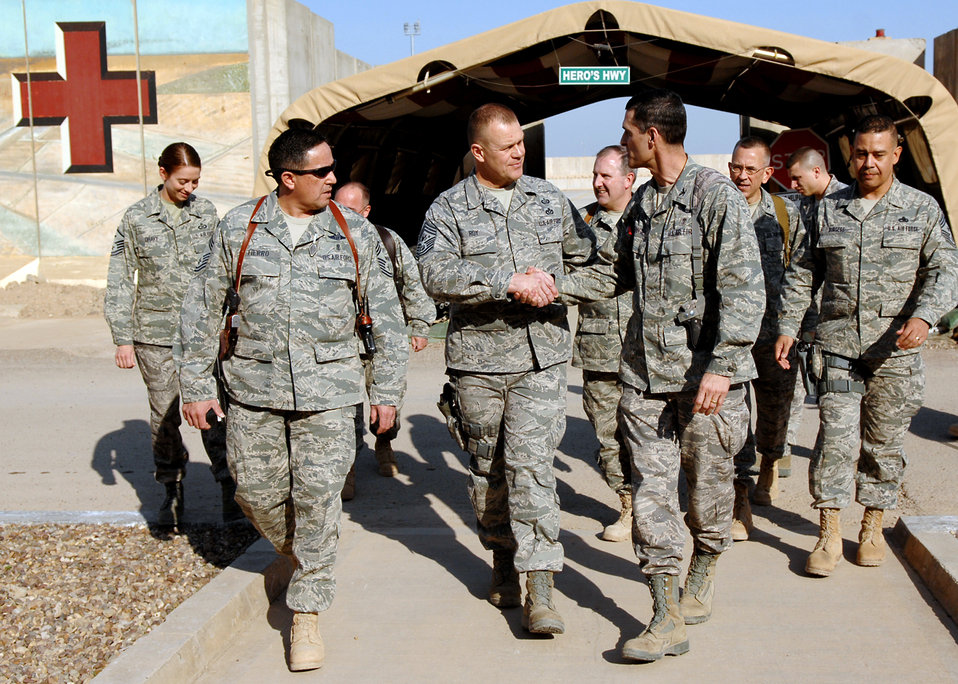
Chief master sgt. of the Air Force visits Joint Base Balad

Chief Master Sgt. of the Air Force James A. Roy shakes hands with Col. Mark Koeniger after touring Hero's Highway at the Air Force Theater Hospital Dec. 4, 2009, at Joint Base Balad, Iraq. During his first visit to JB Balad as the chief master sergeant of the Air Force, Chief Roy toured various locations on the base and mentored Airmen during an Airman's call. Colonel Koeniger is the commander of the 332nd Expeditionary Medical Support Group,